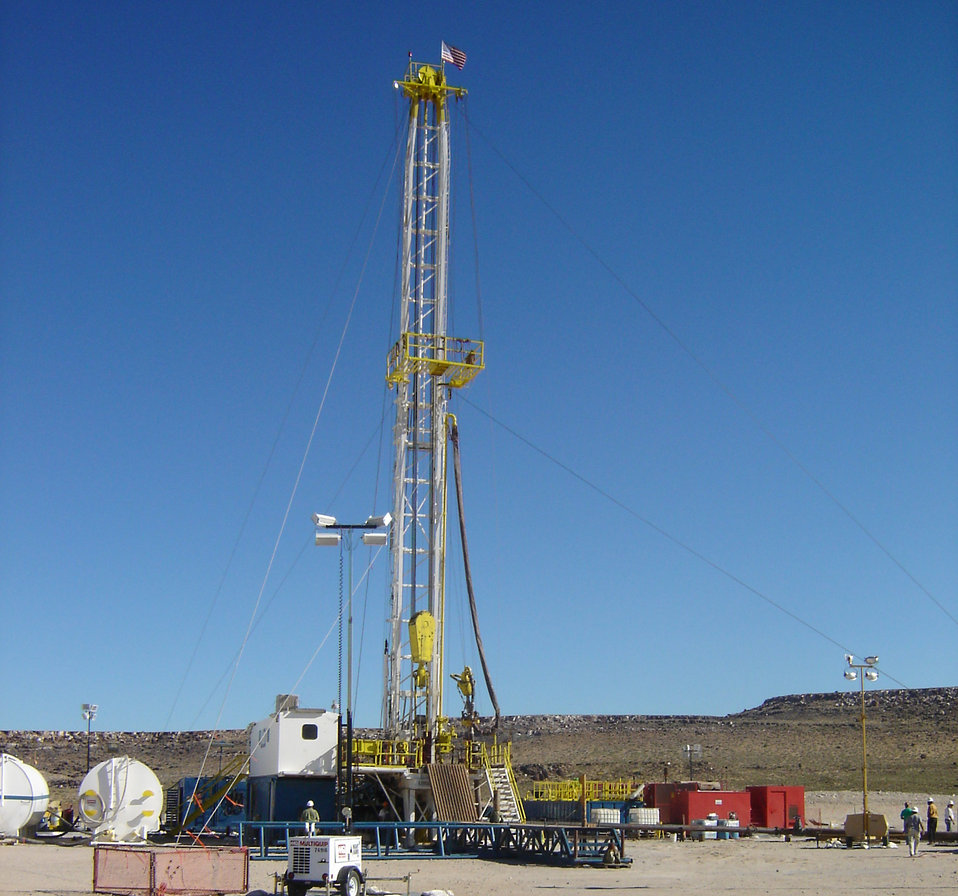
Digging Deeper into Nevada Test Site Groundwater

Drill rig mobilized at ER-20-8 located on
Pahute Mesa at the Nevada Test Site

Well construction, sampling, and data logging at the ER-20-8 is expected to be complete by August 13, 2009. However, as mobilization begins for drilling at the next site, ER-EC-11, the information gathered from ER-20-8 will undergo further review and analysis. All of the nine wells drilled over the next three years (including one more funded by the Recovery Act) will enhance the existing network of more than 115 wells on and off the Nevada Test Site which are sampled regularly to ensure the protection of the public.